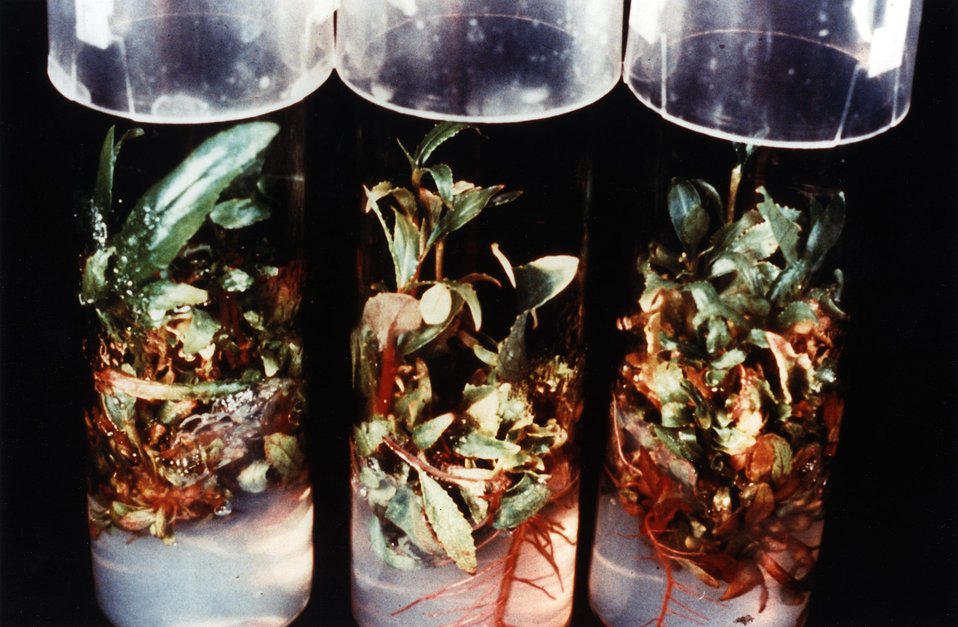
SCIENTISTS ARE MAKING GREAT ADVANCES IN BIOFUELS RESEARCH BY APPLYING THE NEW TECHNIQUES OF BIOTECHNOLOGY.
UNDER THE DOE-FUNDED TERRESTRIAL ENERGY CROPS PROGRAM AT OAK RIDGE NATIONAL LABORATORY, SCIENTISTS ARE USING TISSUE CULTURES - TINY PLANTLETS GROWN IN TEST TUBES - TO STUDY THE DISEASE RESISTANCE OF POTENTIAL ENERGY CROPS, IMPROVING THE EFFICIENCY AND CHANCE OF RESEARCH SUCCESS.